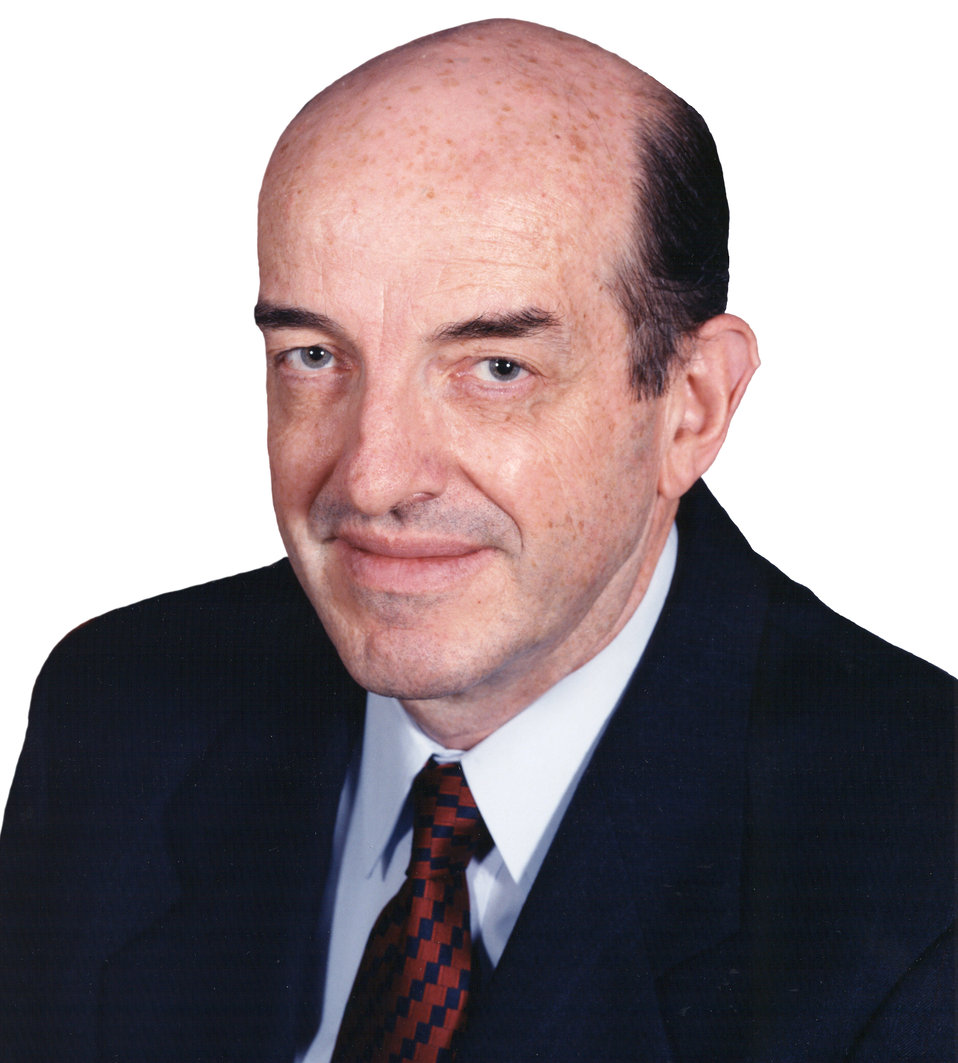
ppmjc-1